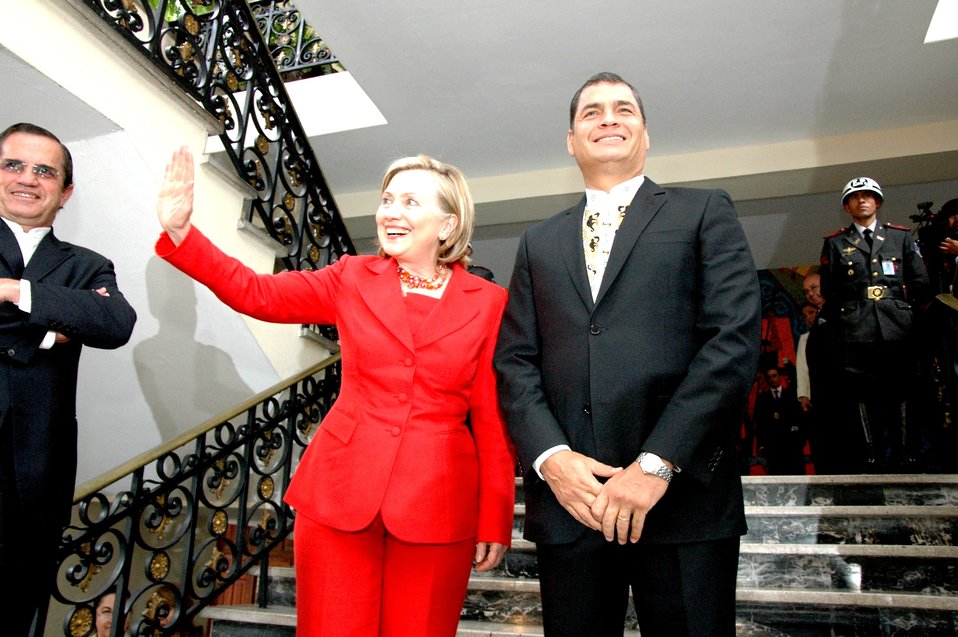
Secretary Clinton Enters Carondelet Palace

U.S. Secretary of State Hillary Rodham Clinton enters the Carondelet Palace to meet Ecuadorian President Rafael Correa for their bilateral meeting in Quito, Ecuador, on June 8, 2010.